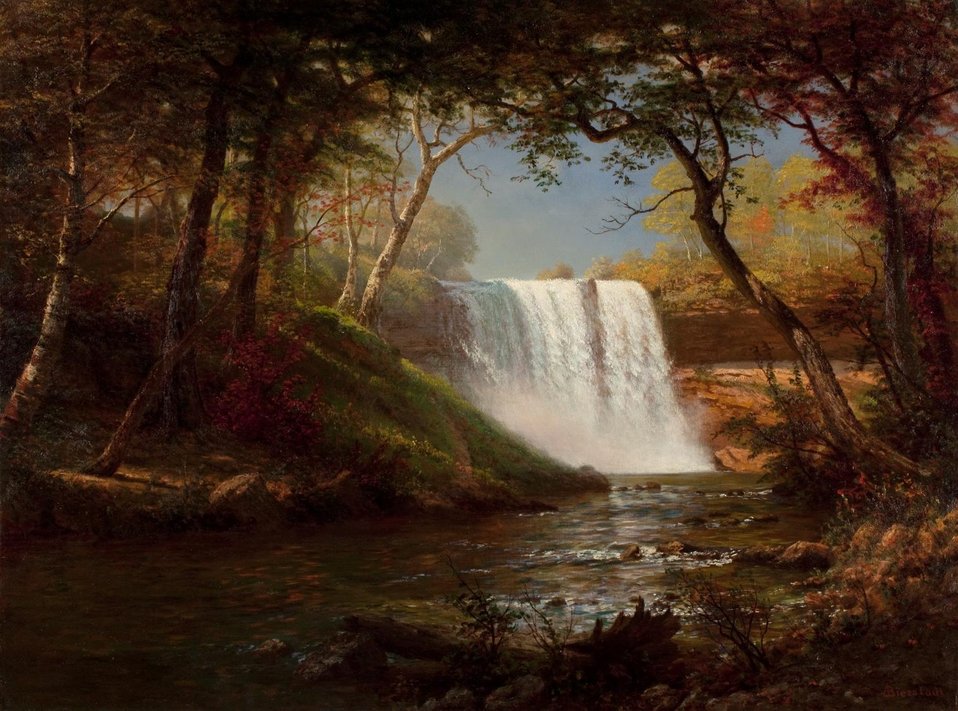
Albert Bierstadt - Minnehaha Falls